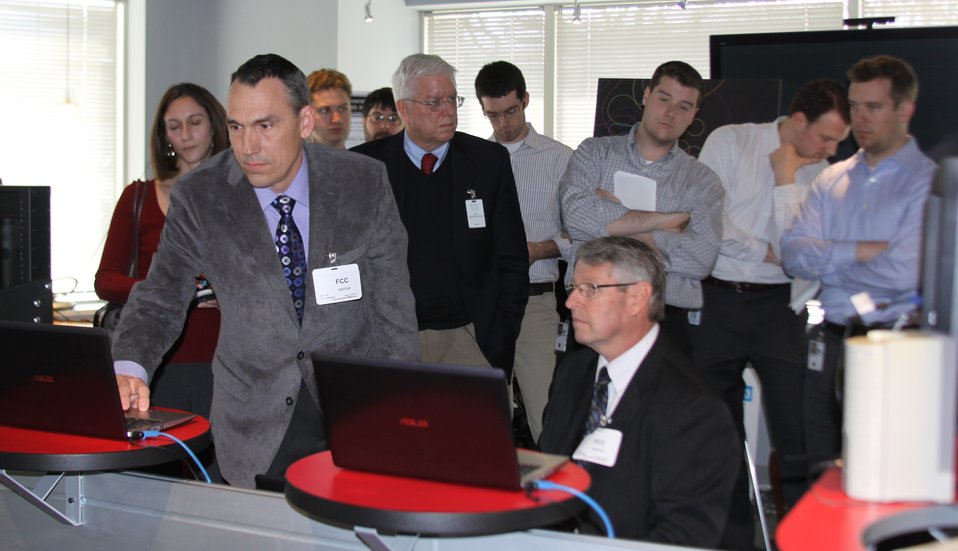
Technology Experience Center Demonstration